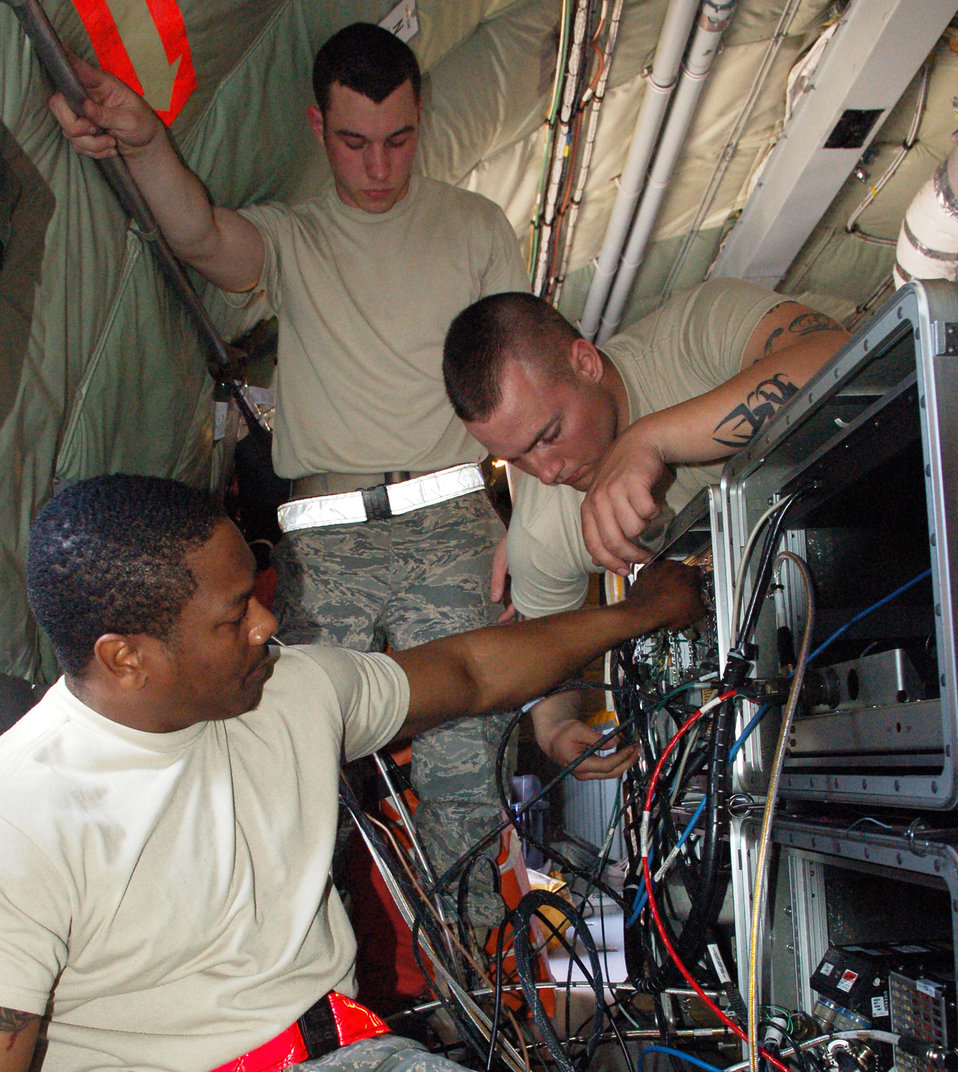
Manas KC-135s revolutionize combat operations

Airman 1st Class Joseph Robinson (front), Senior Airman William Allen (right) and Airman 1st Class Michael Burton help hook up the Roll-On-Beyond-Line-Of-Sight Enhancement System